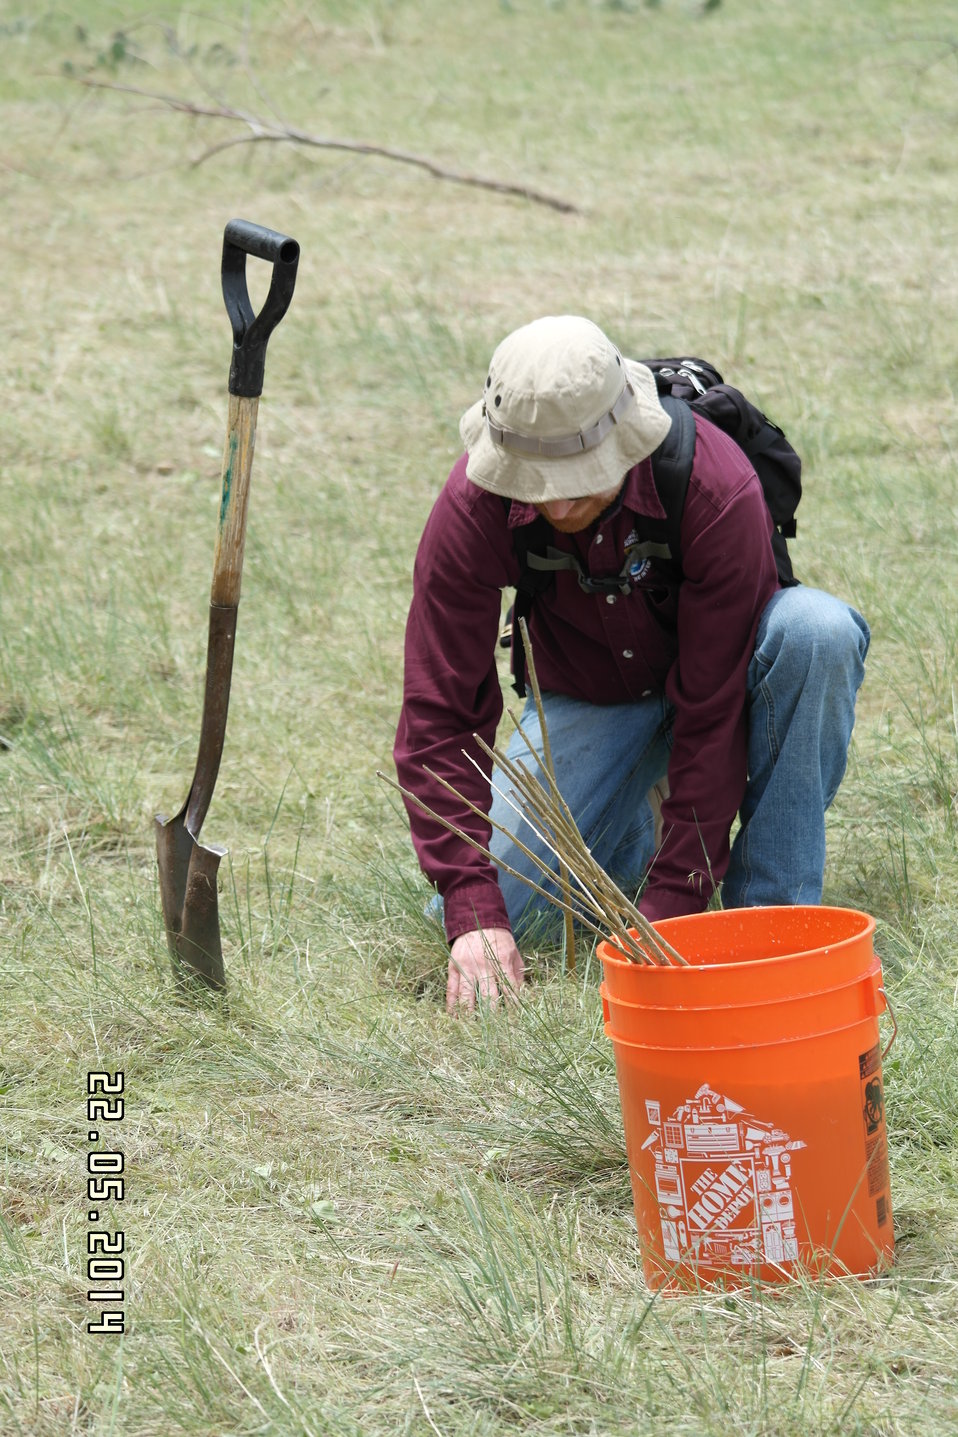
Tree Planting

Jewell made the announcement at an event at Rocky Mountain Arsenal National Wildlife Refuge outside Denver, Colorado, where she was joined by U.S. Department of Agriculture (USDA) Deputy Under Secretary for Natural Resources and the Environment Arthur “Butch” Blazer; Greg Knadle, Vice President for Government Relations of the National Fish and Wildlife Foundation (NFWF); Refuge Manager David Lucas and youth corps members of Groundwork Denver.